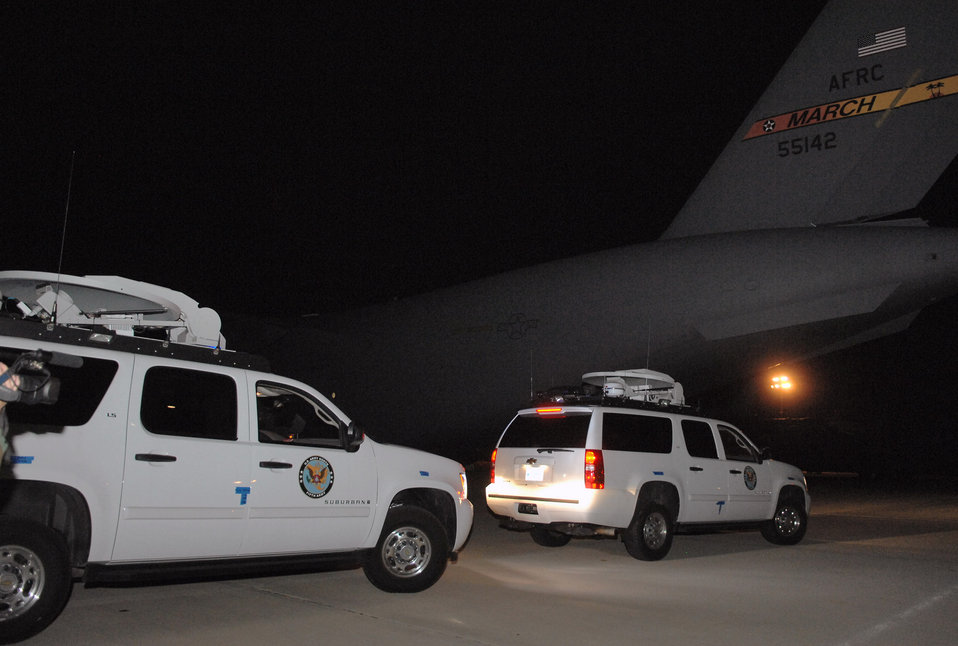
Airmen deliver firefighting support

Federal Emergency Management Agency vehicles prepare to exit the flightline after being off-loaded from a C-17 Globemaster III Oct. 24 at March Air Reserve Base, Calif. Soldiers from U.S. Army North are assisting with Southern California wildfires by managing and aiding all the Defense Department forces involved.